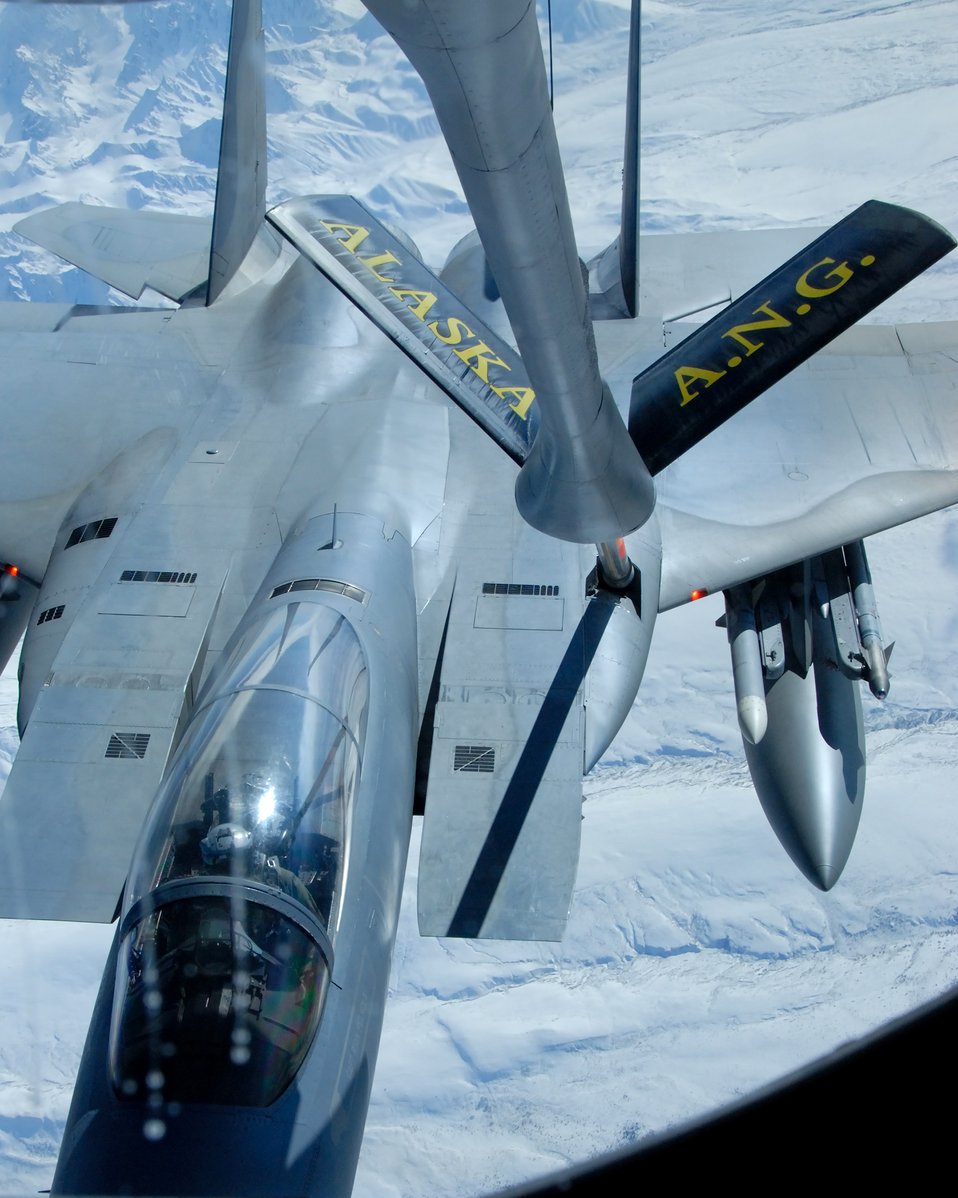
Gas at 20,000 feet

A 12th Fighter Squadron F-15 Eagle from Elmendorf Air Force Base, Alaska, refuels behind a KC-135 Stratotanker March 26 over the Pacific Alaska Range Complex. The KC-135 is from the 168th Air Refueling Squadron at Eielson AFB, Alaska. Nearly all internal fuel, up to 200,000 pounds, can be pumped through the flying boom, the KC-135's primary fuel transfer method.